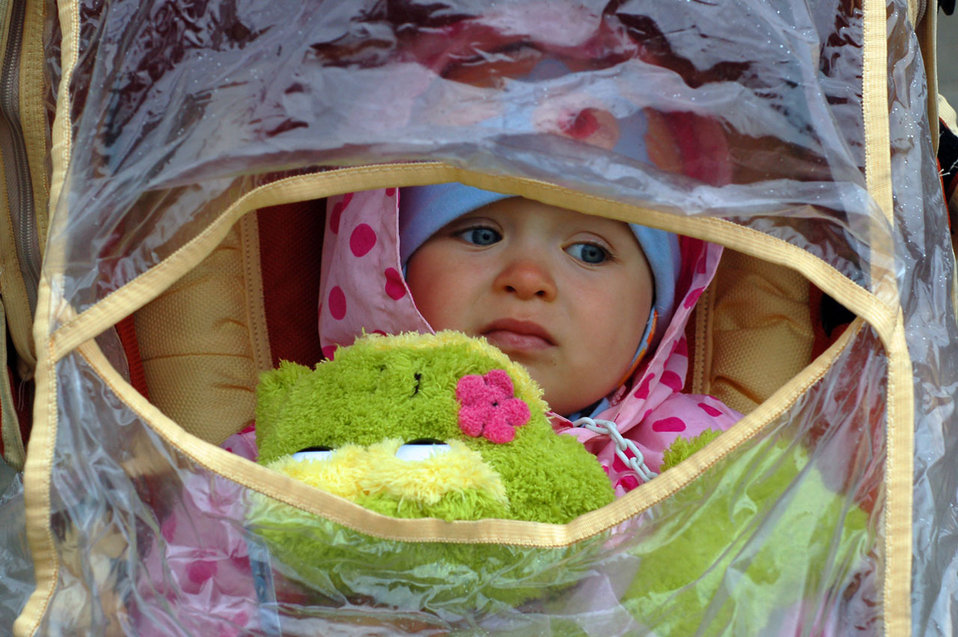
Rainy day

Little girl with a toy frog sitting in a pushchair.